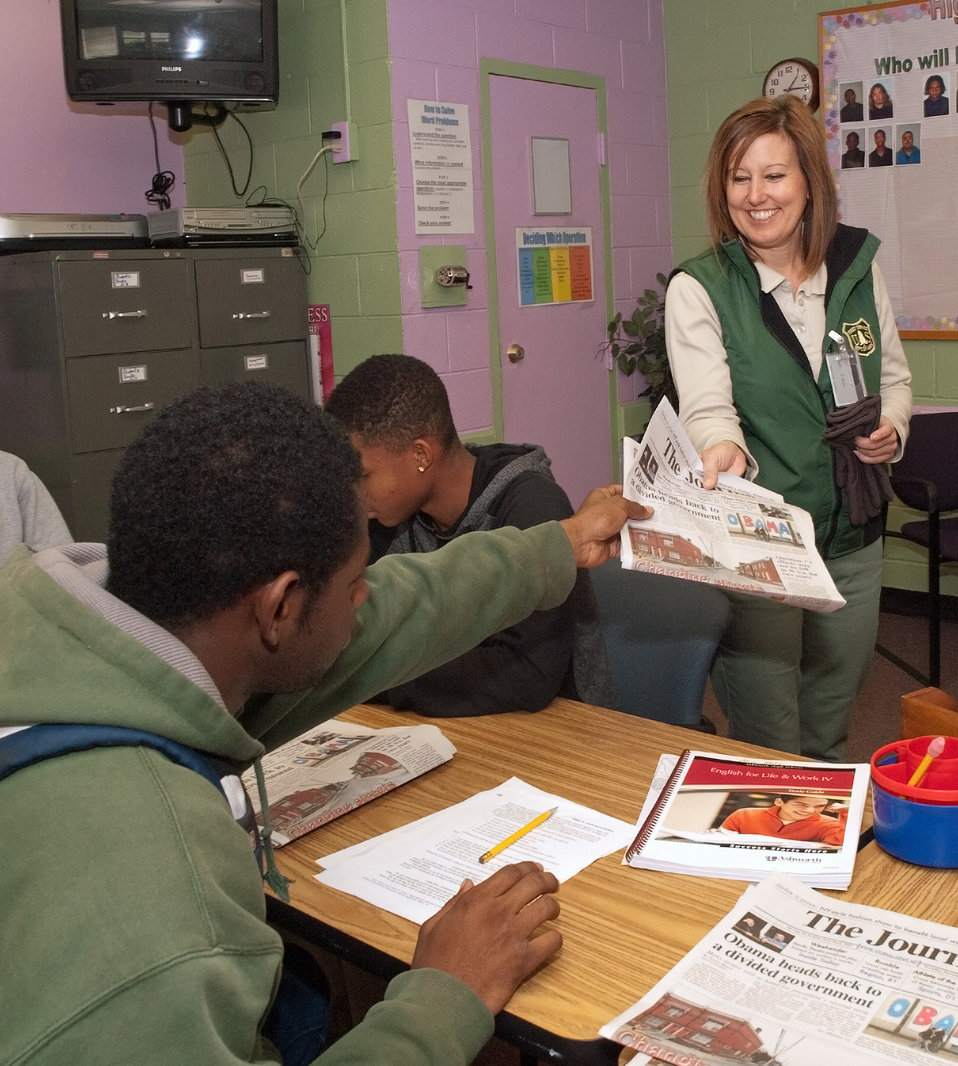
Forest Service liaison specialist Anna Steadith students at the Job Civilian Conservation Corp Center (JCCCC) in Harpers Ferry, WV on Nov. 8, 2012. Steadith is the the public relations staffer for the center and advises students on work based learning projects.The U.S. Forest Service manages 28 Job Corps Civilian Conservation Centers.